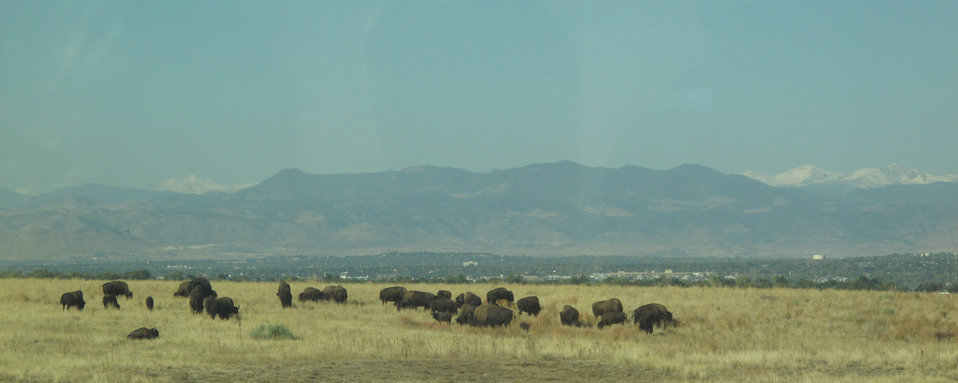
Bison

A tour bus takes you out to the bison fields where you can see bison in action.